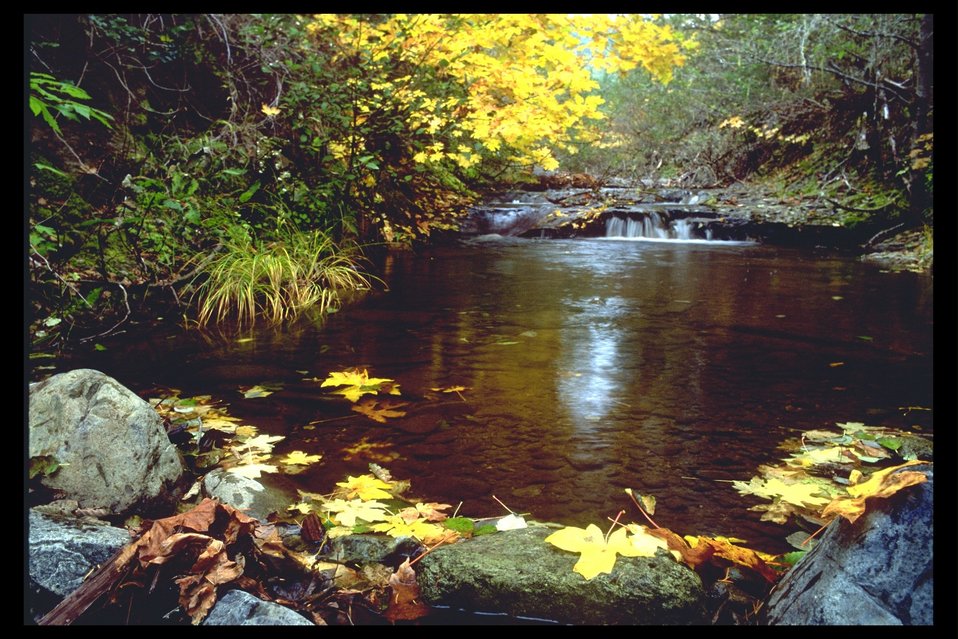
West Branch Elk Creek.